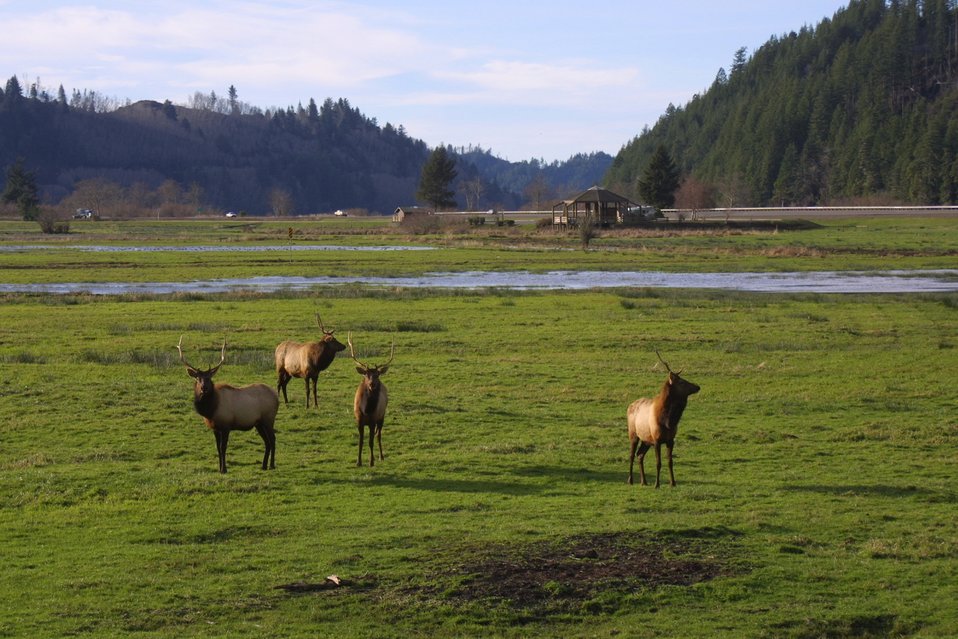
Elk at the Dean Creek Watchable Wildlife site near Reedsport, Oregon.